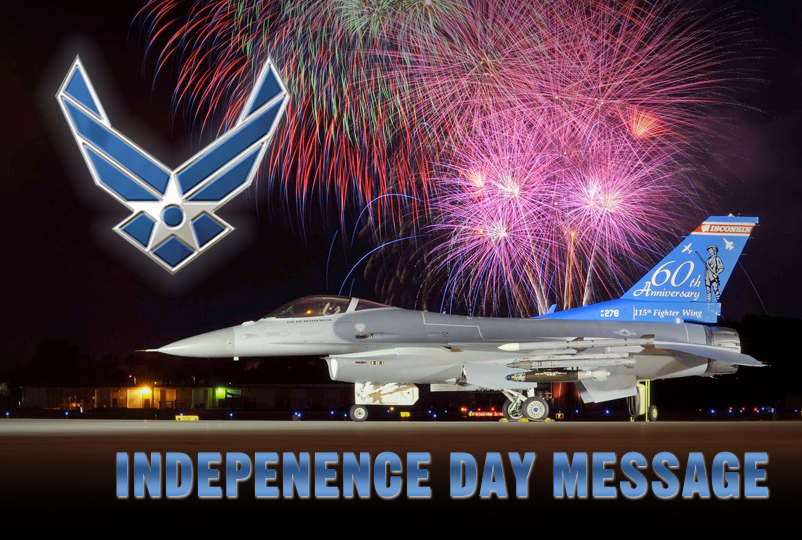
Independence Day Message